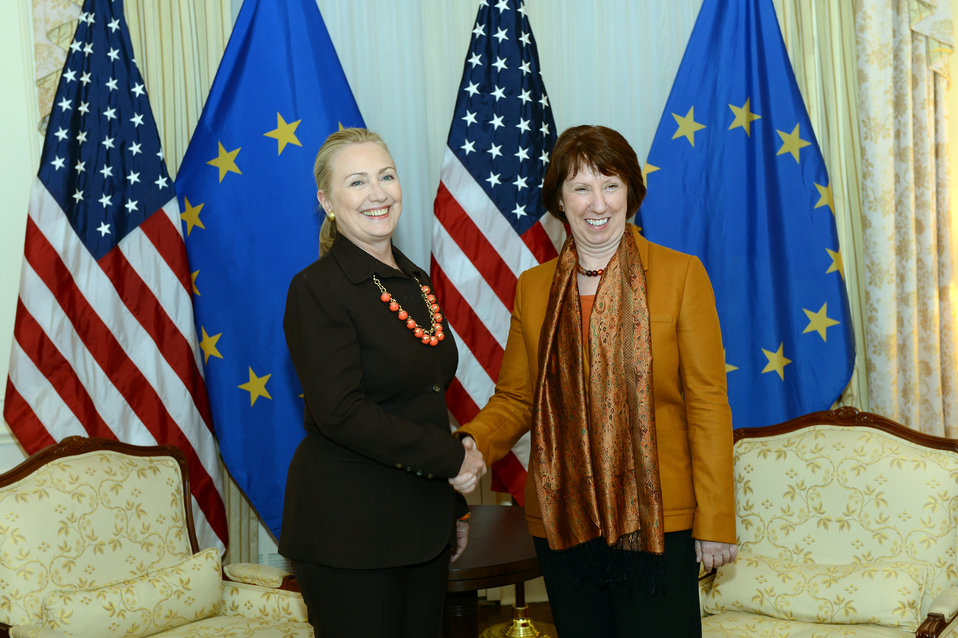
Secretary Clinton Meets With EU High Representative Ashton

U.S. Secretary of State Hillary Rodham Clinton meets with EU High Representative Catherine Ashton in New York, New York on September 23, 2012.